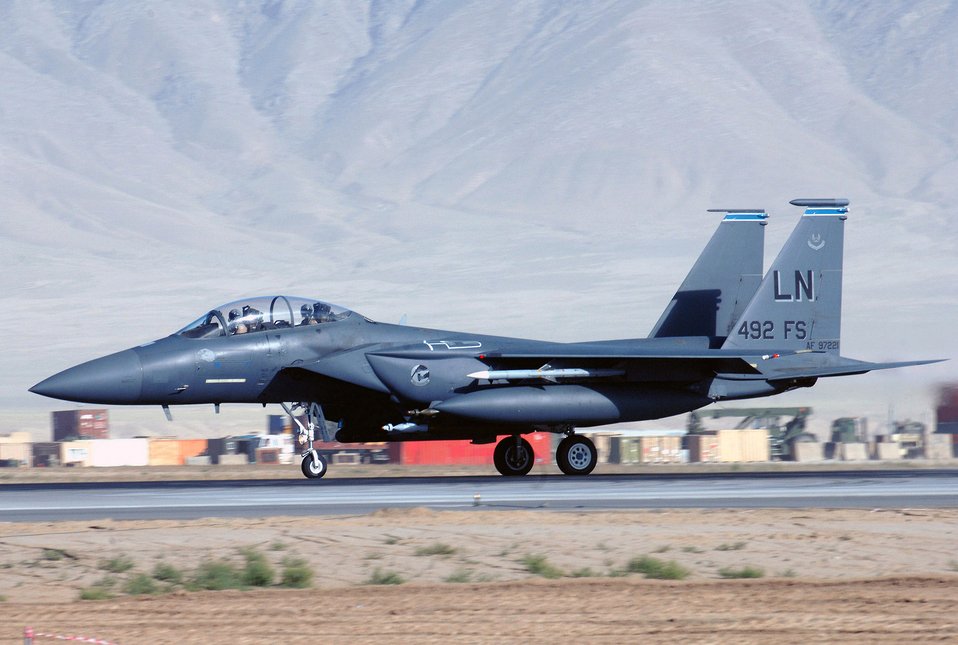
Airpower Summary

An F-15E Strike Eagle assigned to the 492nd Expeditionary Fighter Squadron takes off from Bagram Airfield, Afghanistan June 9. The 492nd EFS is deployed from Royal Air Force Lakenheath, England.